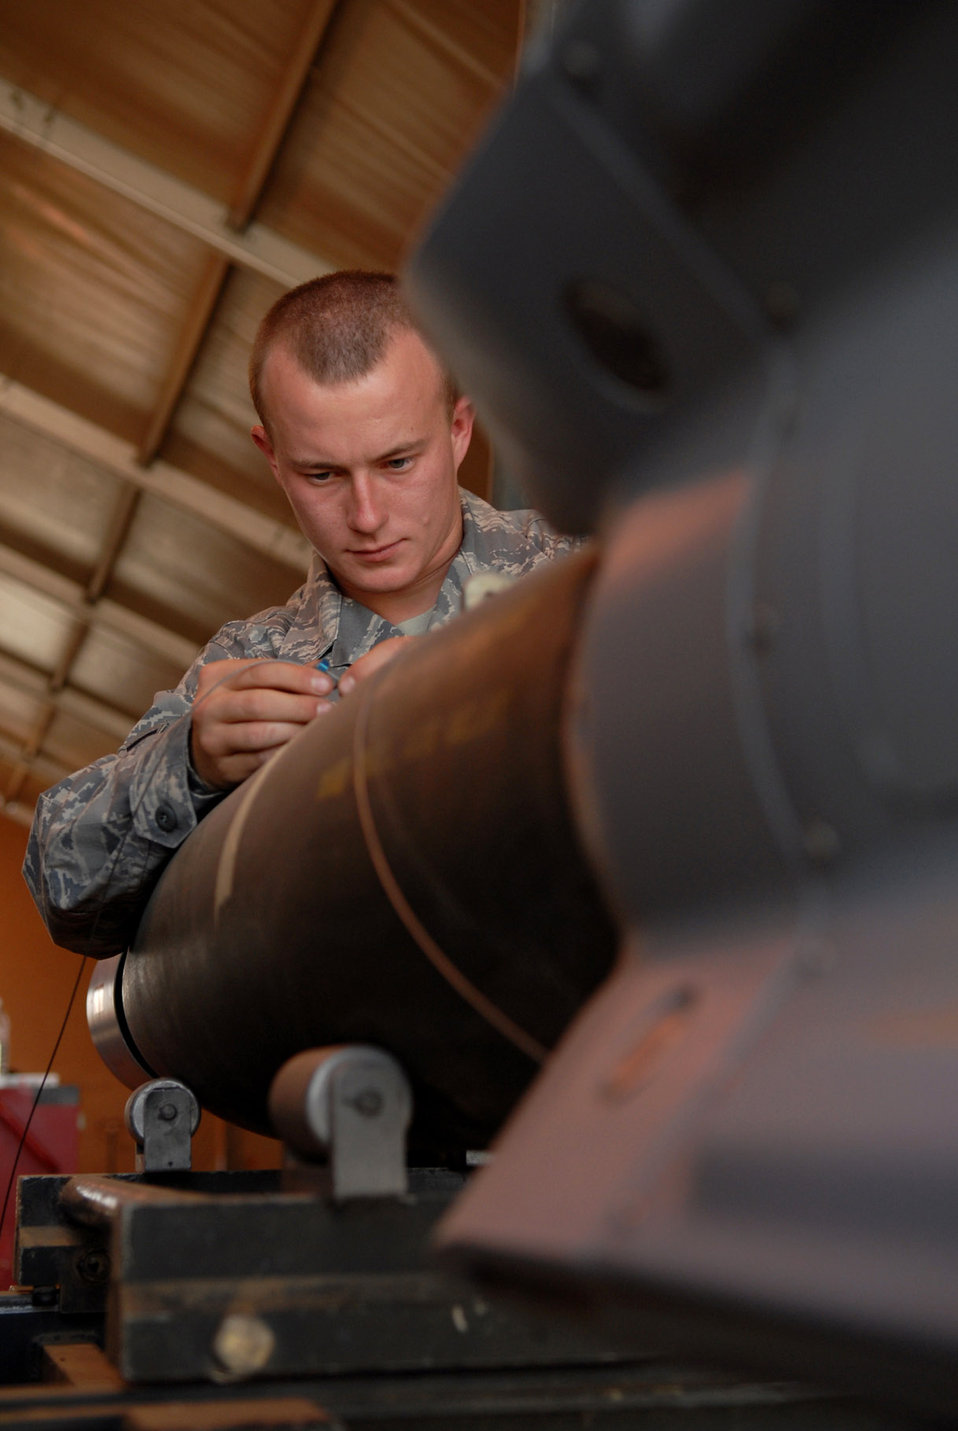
Some assembly required

Airman 1st Class Richard Spurgeon connects a guided bomb unit-12 arming lanyard to a bomb body June 16 at Joint Base Balad, Iraq. The length of the lanyard is determined based upon on the aircraft it will be attached to. This lanyard controls the initiation timing according to the aircraft specifications; the GBU-12 can self-guide to a target pinpointed by a laser designator, which helps to minimize collateral damage resulting from detonation. Airman Spurgeon is a 332nd Expeditionary Maintenance Squadron munitions systems specialist deployed from Shaw Air Force Base, S.C.